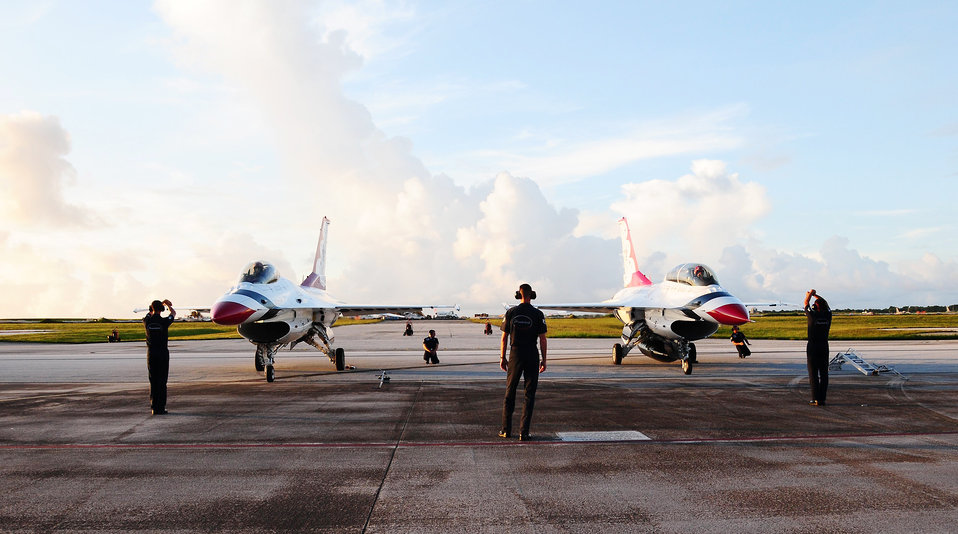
Park here!

Thunderbird F-16 Fighting Falcons from the U.S. Air Force Aerial Demonstration Squadron taxi on the Andersen Air Force Base, Guam, flightline Oct. 5, 2009. Andersen AFB had to reschedule its air show from Sept. 30 due to a number of tropical storms.